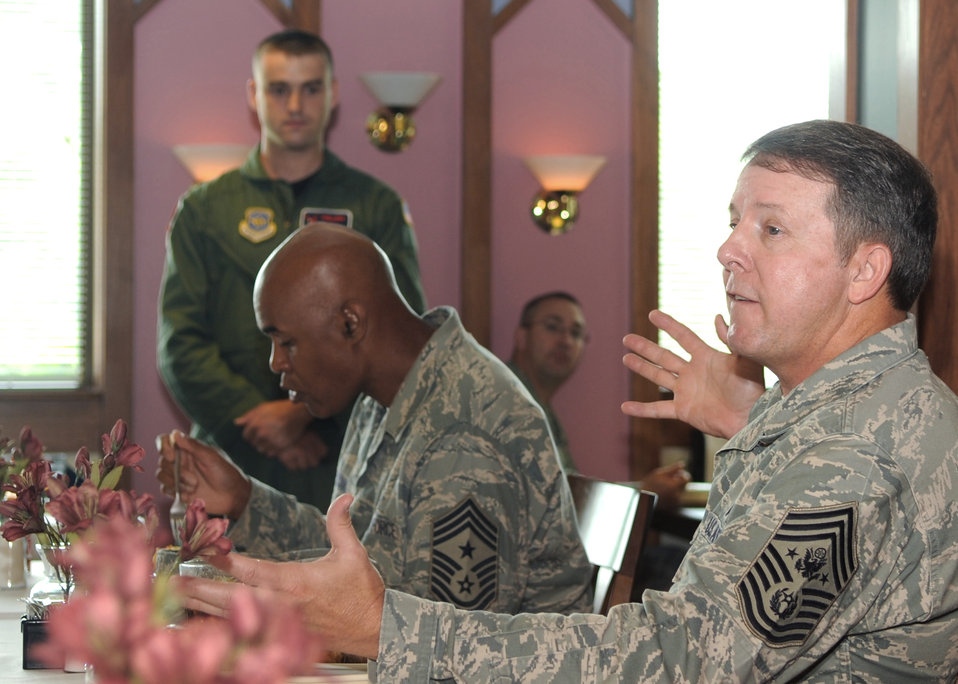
CMSAF visits Seymour Johnson

Chief Master Sgt. of the Air Force Rodney McKinley (right) fields questions from Airmen in the Southern Eagle Dining Facility on Seymour Johnson Air Force Base, June 12. Airmen listen as CMSAF McKinley explains his perspective on issues that will affect the future of the Air Force.